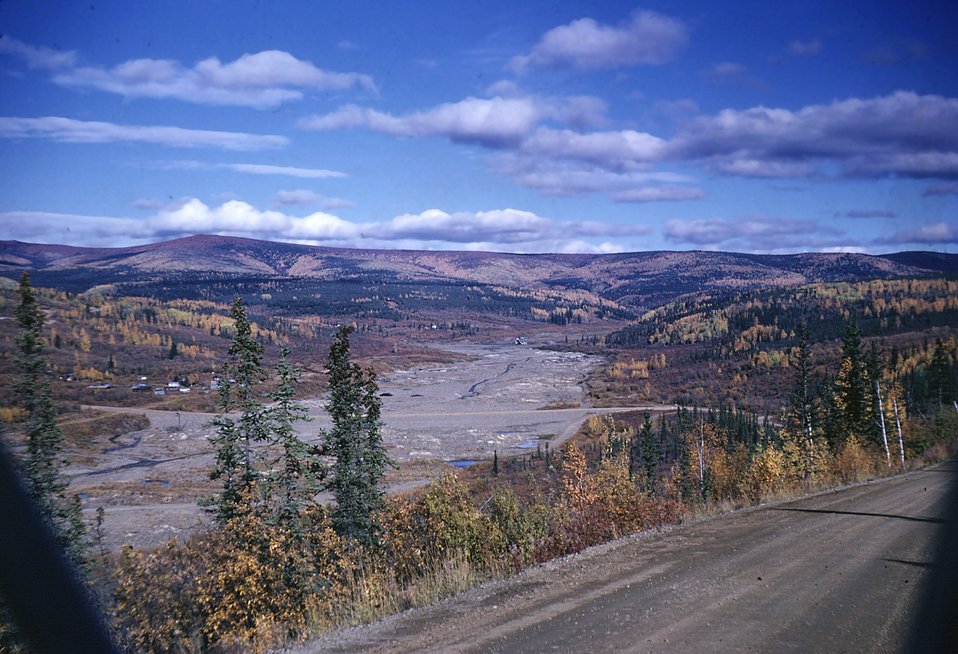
Fall colors along Taylor Highway, near Chicken